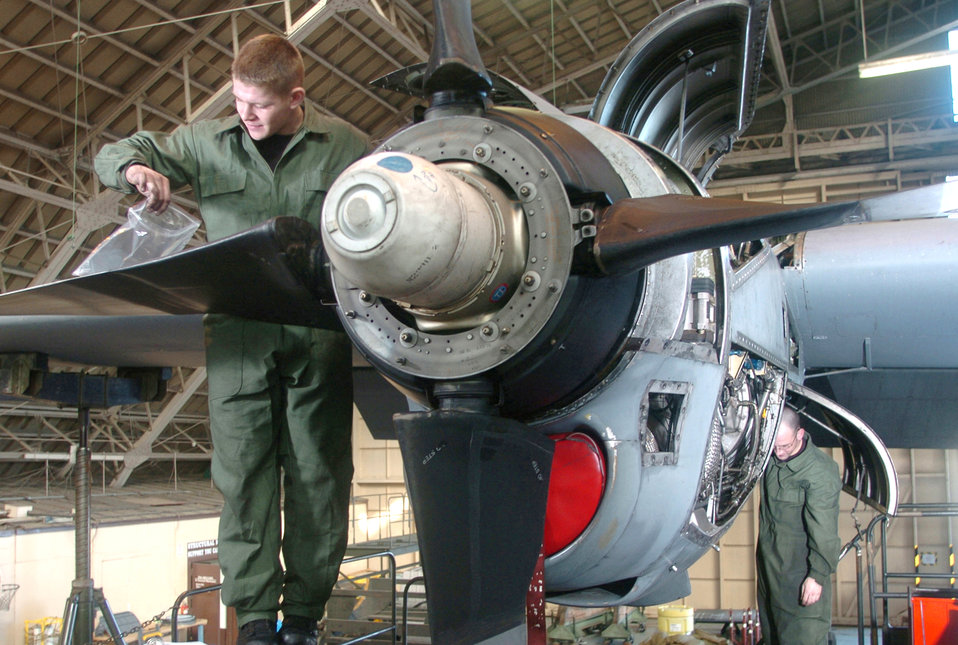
Yokota isochronal Airmen keep Pacific fleet healthy

YOKOTA AIR BASE, Japan -- Airman 1st Class Matthew McGonagle (left) and Staff Sgt. Philip Farnstrom inspect a C-130 Hercules engine during an annual check here. Pacific Air Force C-130s undergo a major inspection once a year to ensure that the fleet is in top condition. The Airmen are engine specialists assigned to the 374th Maintenance Squadron.